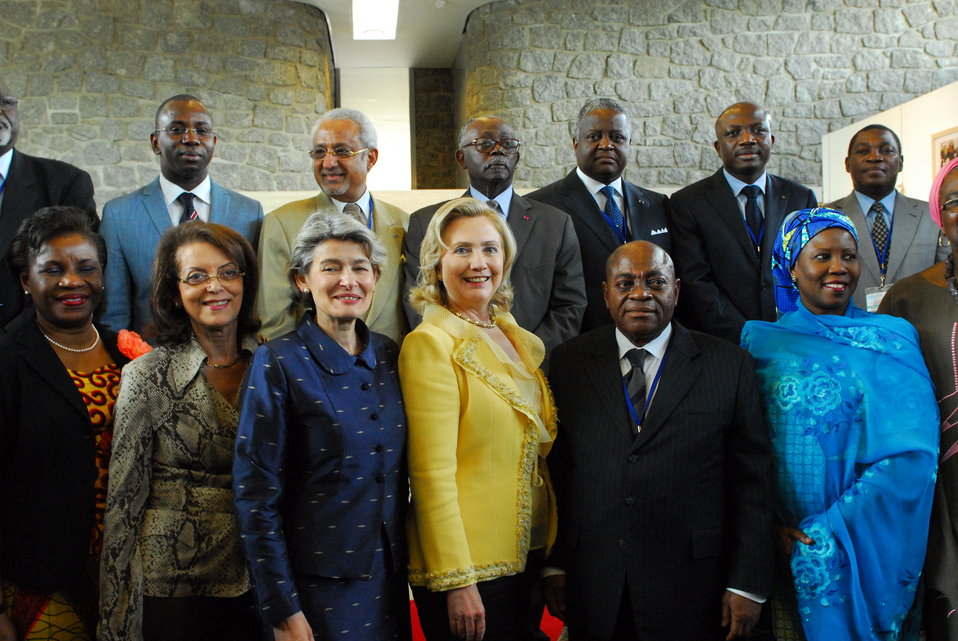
Secretary Clinton Tours the UNESCO Africa Week Exhibition

U.S. Secretary of State Hillary Rodham Clinton tours the UNESCO Africa Week Exhibition, at UNESCO in Paris, France, on May 26, 2011.